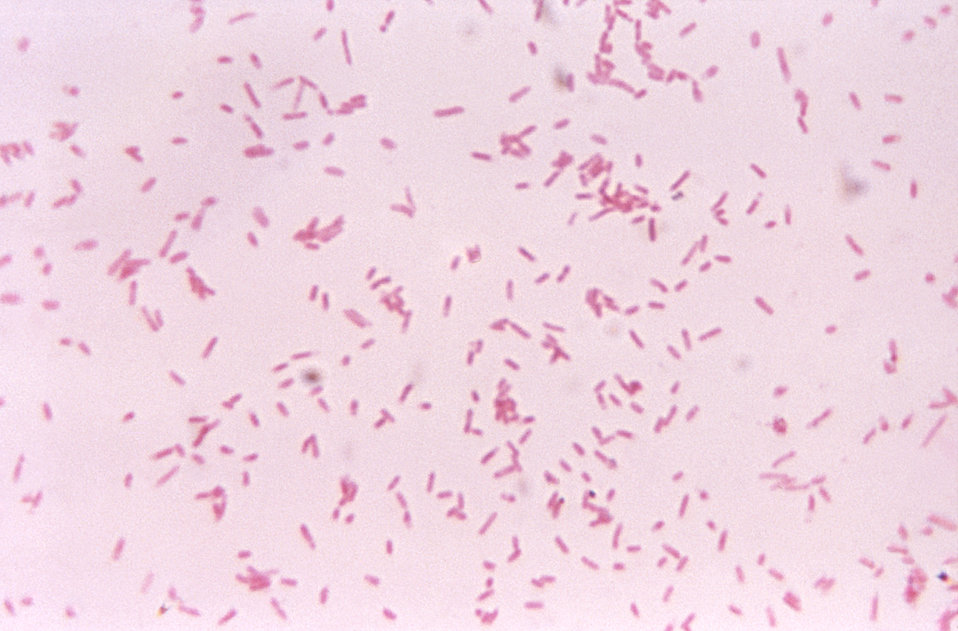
This photomicrograph shows Bacteroides fragilis after being cultured in a thioglycollate medium for 48 hours.